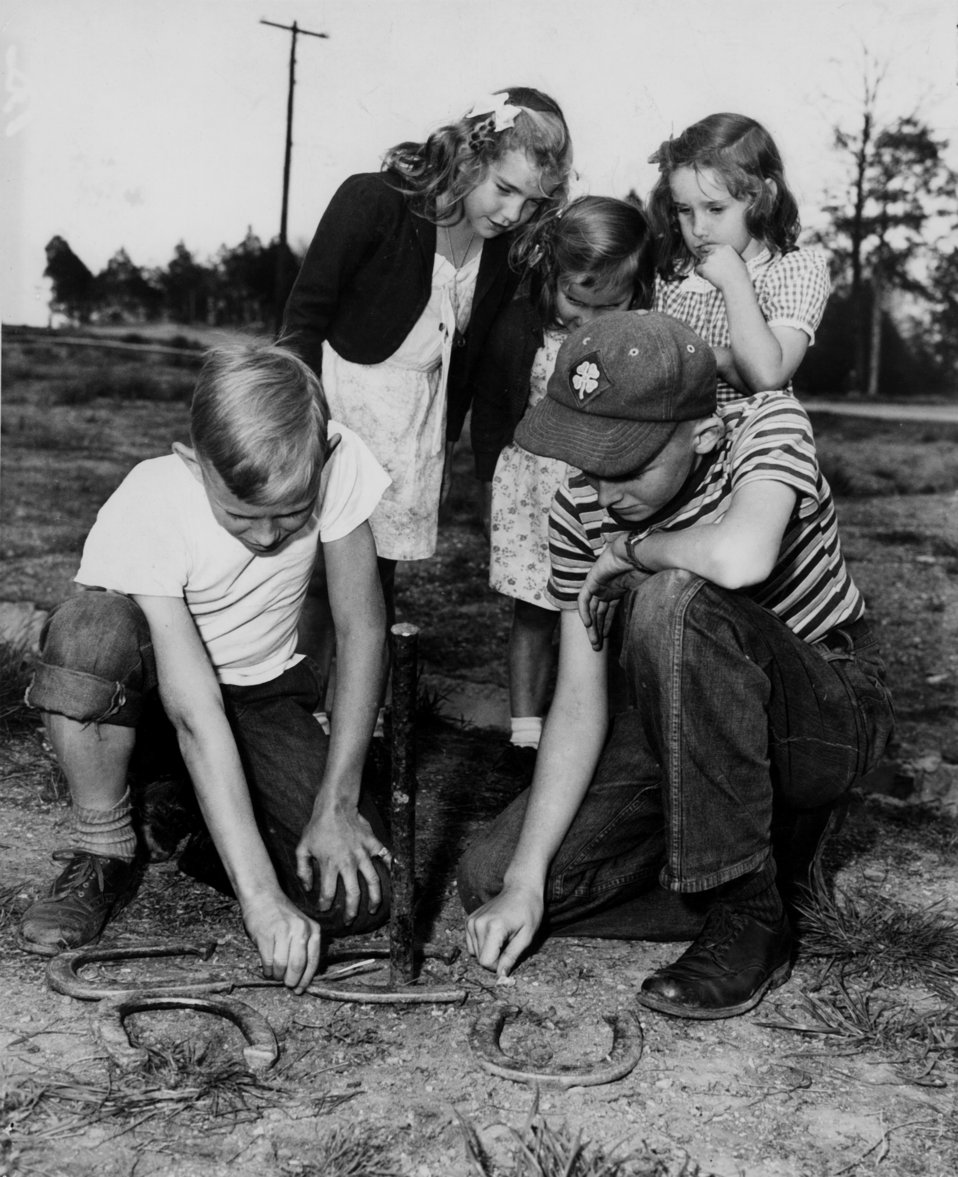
Kids Playing Horse Shoes Oak Ridge

2958-19 DOE photo by Ed Westcott

Kids Playing Horse Shoes Oak Ridge Tennessee 1945